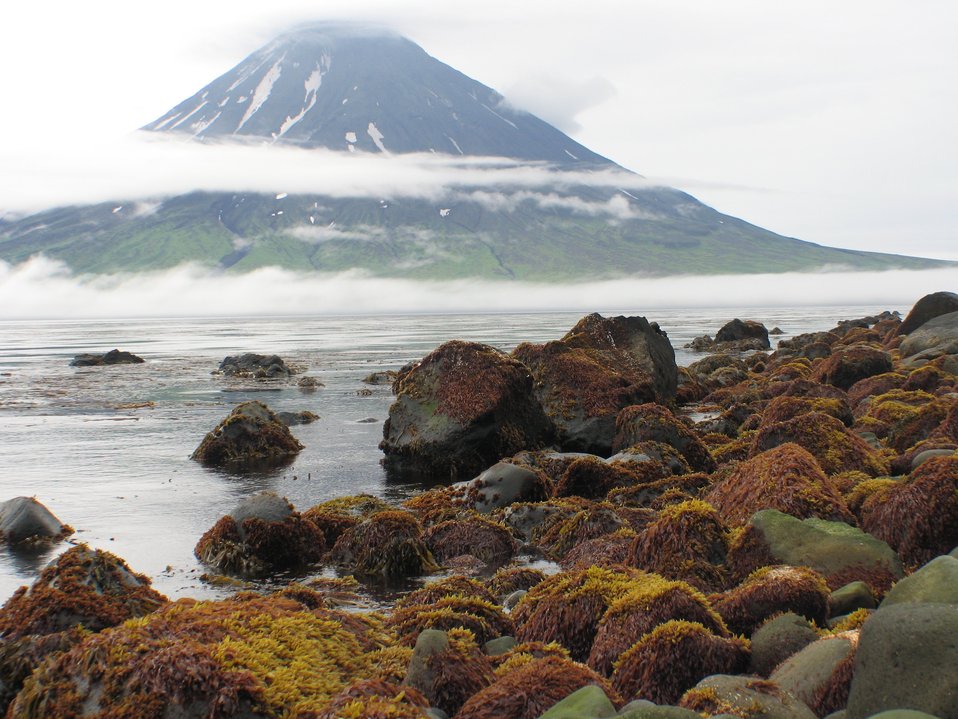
Mount Cleveland Volcano